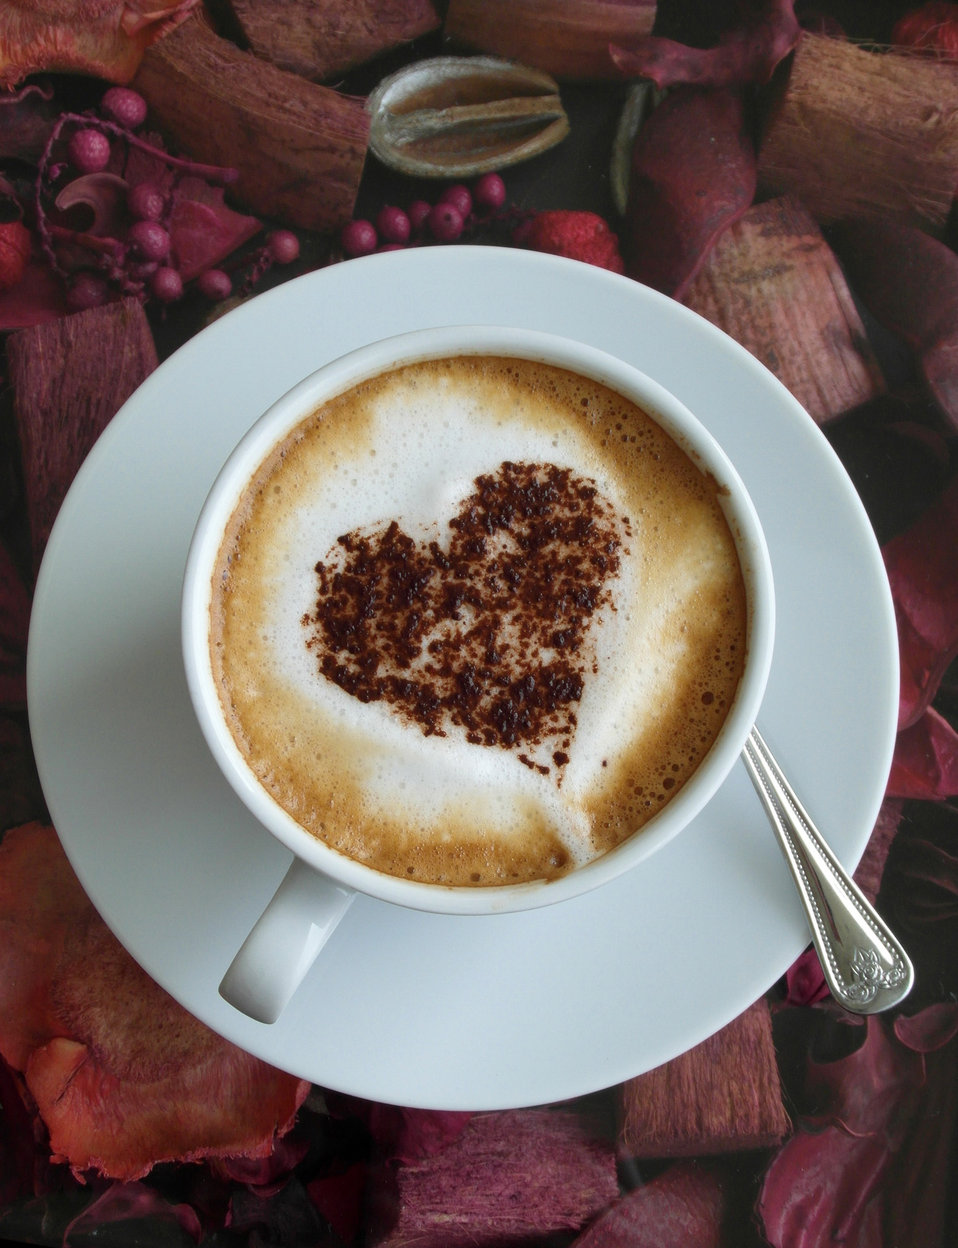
Coffee heart art

Latte with heart art.